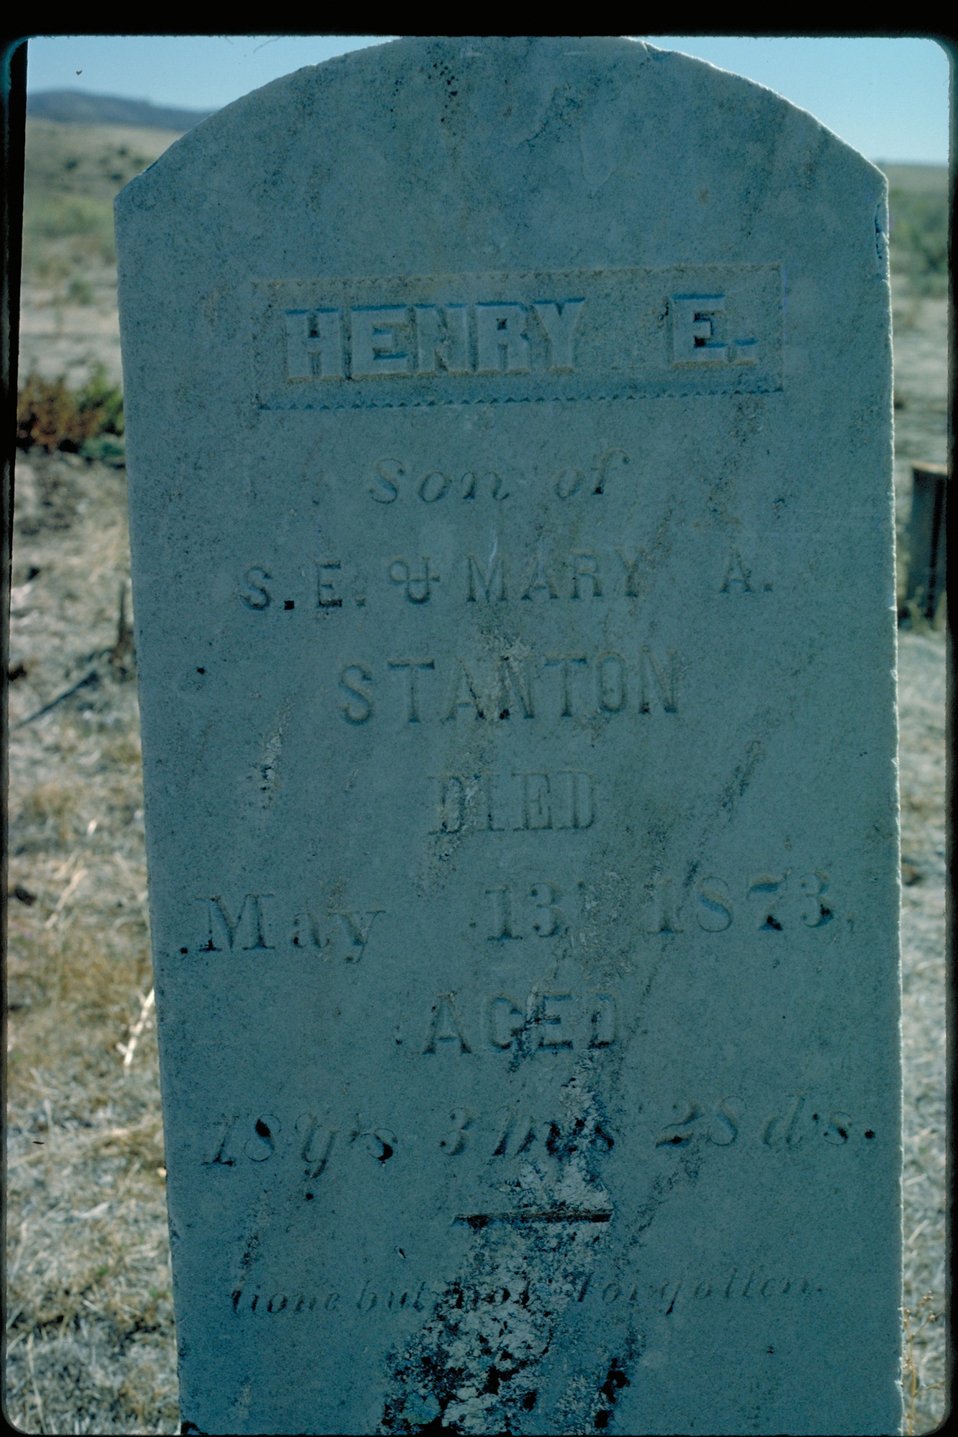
Mayfield Cemetery Grave Oregon Trail Lower Snake River District